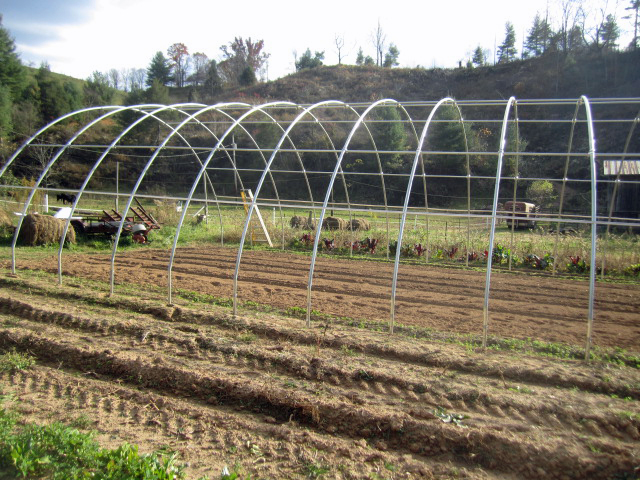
High tunnel construction A

Seasonal high tunnels, or hoop houses, are made of plastic or metal pipe and covered with sheeting, typically made of plastic. High tunnels are easy to build, maintain, move, and provide an energy-efficient way to extend the growing season and provide fresh food for local communities. The U.S. Department of Agriculture (USDA) Natural Resource Conservation Service (NRCS) offers seasonal high tunnels nationwide under the Environmental Quality Incentives Program (EQIP).